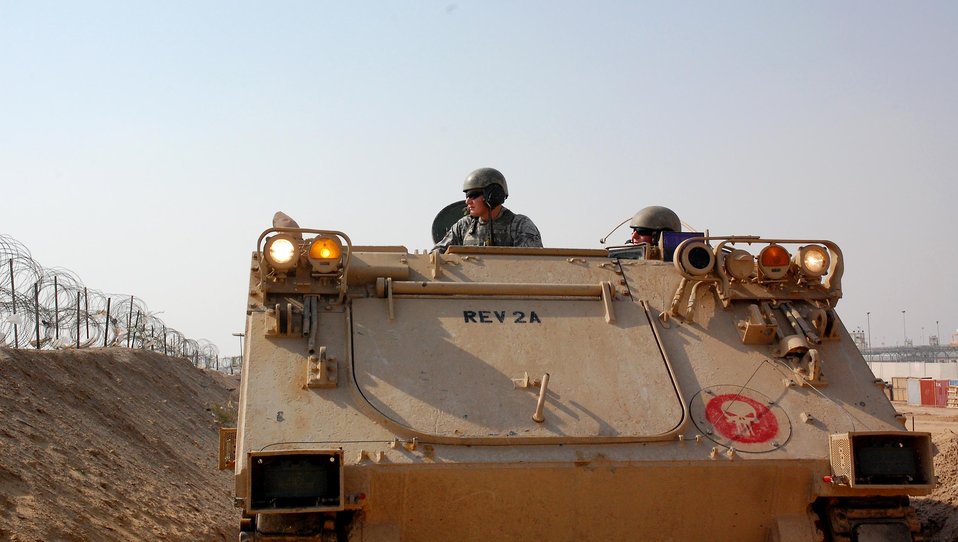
Airmen perform unique missions in Iraq

Senior Airman Travis Hummel (left) and Airman 1st Class Adam Giebitz patrol Feb. 10 in an M-113 Armored Personnel Carrier at the Theater Internment Facility at Camp Bucca, Iraq. Airmen Hummel and Giebitz are deployed from Robins Air Force Base, Ga., and are assigned to the 886th Expeditionary Security Forces Squadron's quick response force. The QRF responds to issues within the TIF in which a show of force or escalation of force is required beyond the capabilities for the TIF's guard force.